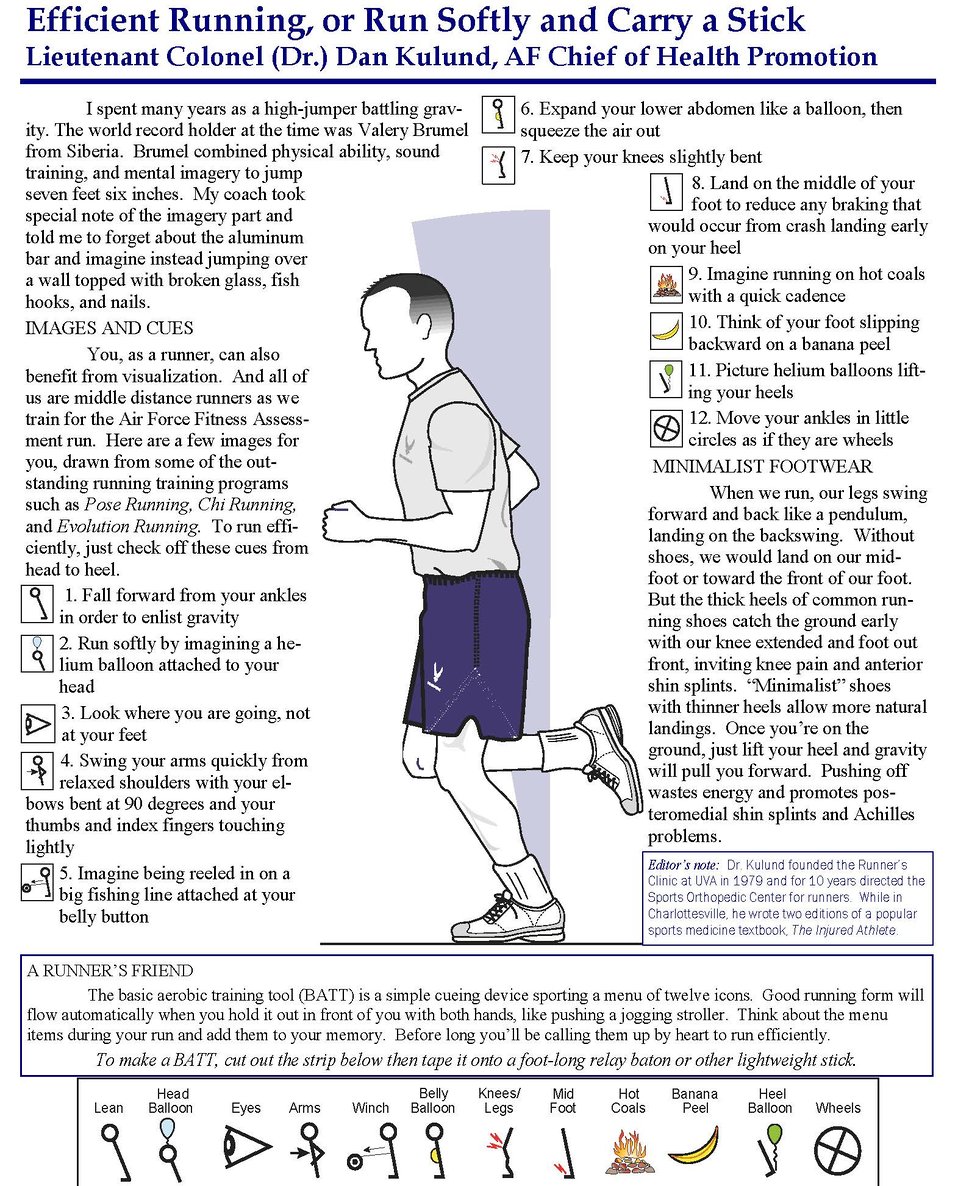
BATT helps runners

The basic aerobic training tool is a simple cueing device sporting a menu of twelve icons. Held out in front of them, it is a memory-aid to remind runners of proper form.